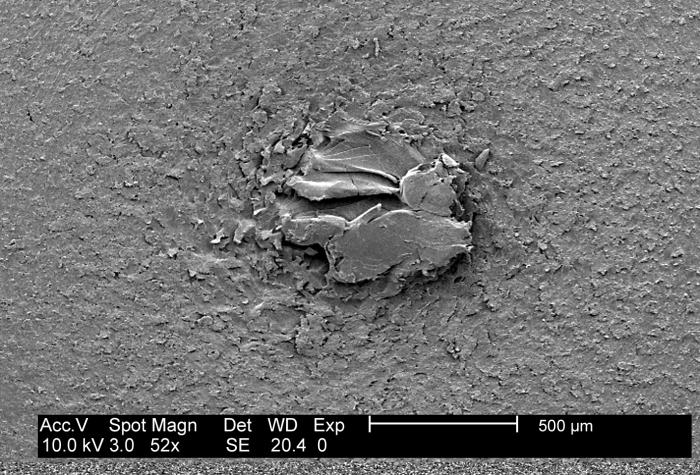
This SEM reveals irregularities in the surface of a PC (polycarbonate) biofilm coupon that is growing an E.coli biofilm.